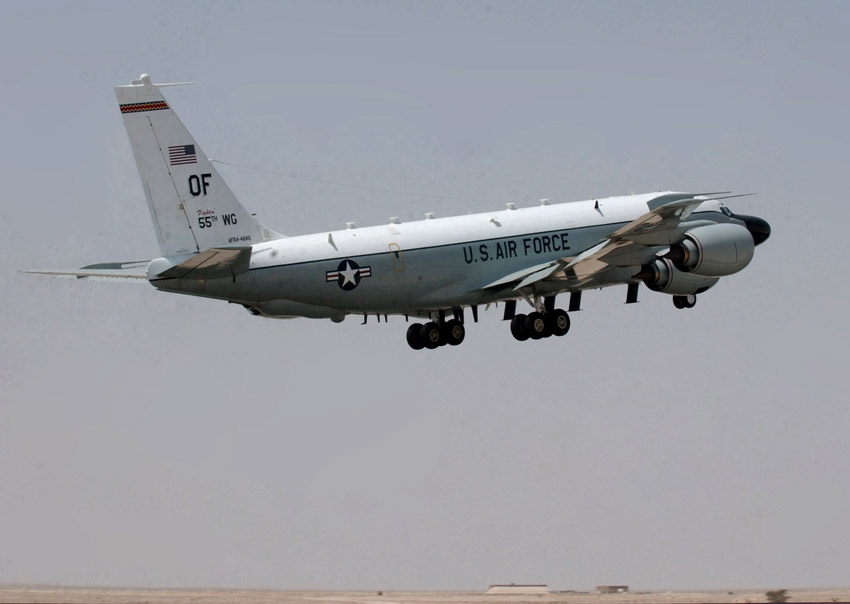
CENTAF Airpower Summary for March 21, 2007

An RC-135 Rivet Joint from 379th Air Expeditionary Wing takes off for a mission March 20 in Southwest Asia. The Rivet Joint provides real time on-scene intelligence collection, surveillance and analysis to forces in the air and on the ground in the U.S. Central Command area of responsibility. The 34-person mission crew can forward gathered information in a variety of formats to a wide range of consumers via Rivet Joint's extensive communications suite.